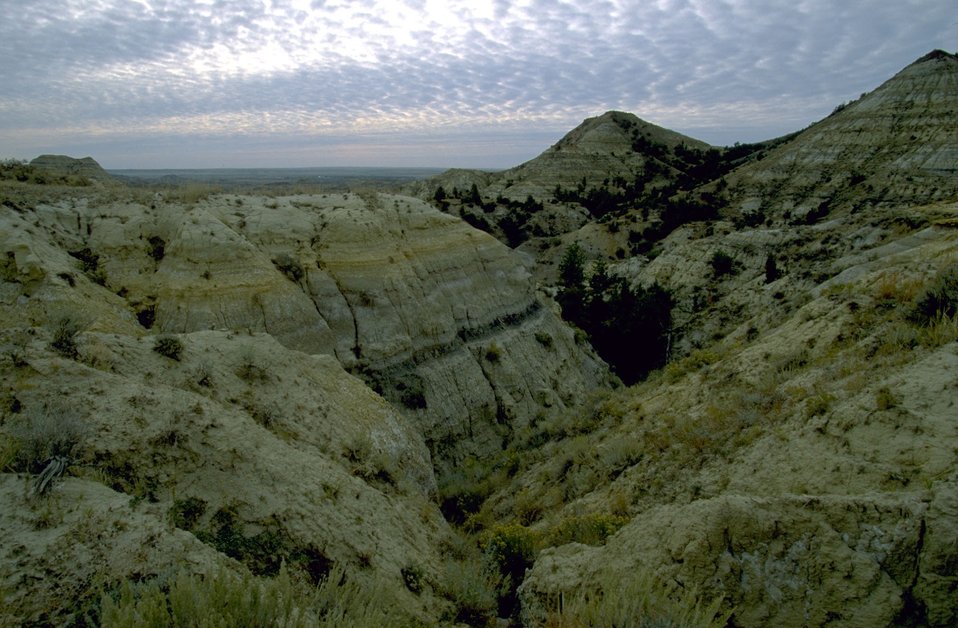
Terry Badlands Wilderness Study Area